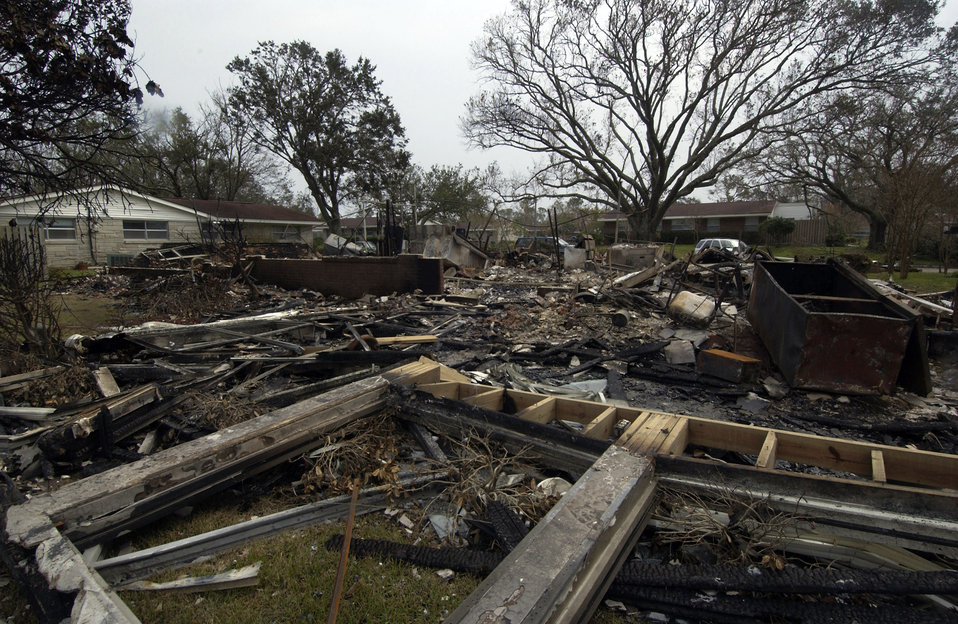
Flattened home

KEESLER AIR FORCE BASE, Miss. -- Fire department officials examine the charred rubble of the home belonging to Col. Bruce Bush, 81st Mission Support Group commander, Sept. 1. The house exploded during Hurricane Katrina, a Category 4 storm that roared through the base three days earlier. Katrina battered the Gulf Coast with wind gusts in excess of 140 mph, flattening buildings and flooding areas from Florida to Louisiana. Millions of people are left without power, and hundreds of thousands are homeless.